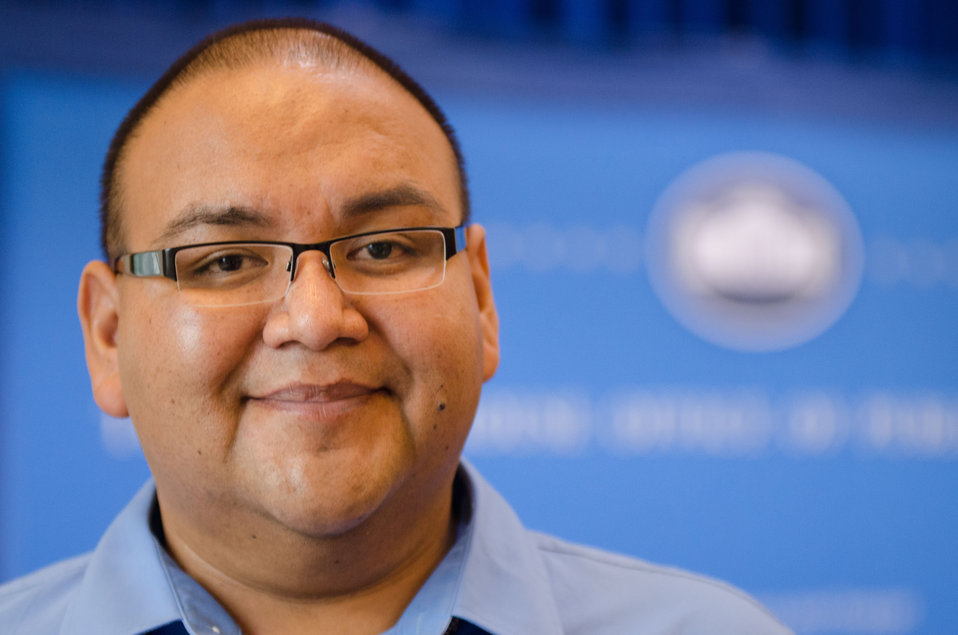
Tohono O’odham Community Action Co-Founder and President Terrol Johnson is one of eleven honorees recognized for their efforts to reduce hunger and increase food security in the U.S. and internationally at the White House Champions of Change Strengthening Food Security at Home and Abroad Event held at the White House on Thursday, September 6, 2012.